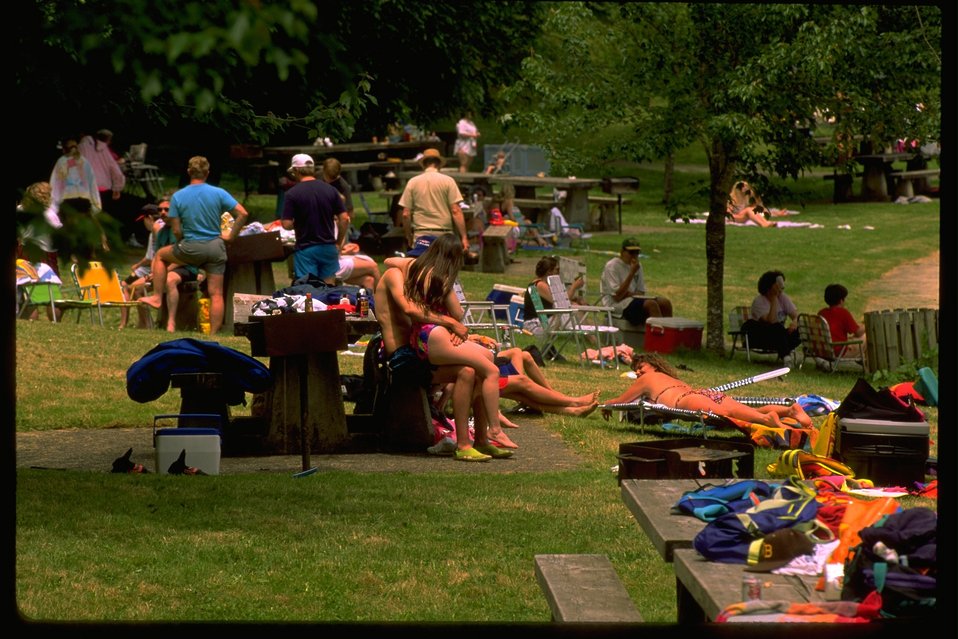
Loon Lake Beach.